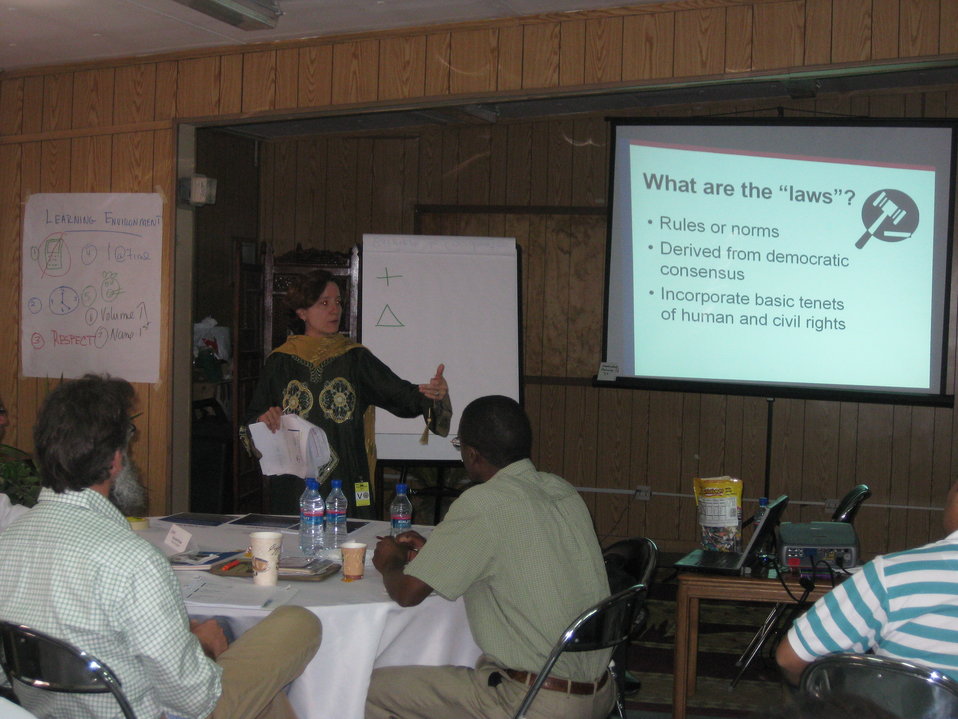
Afghan Youth Voices 025